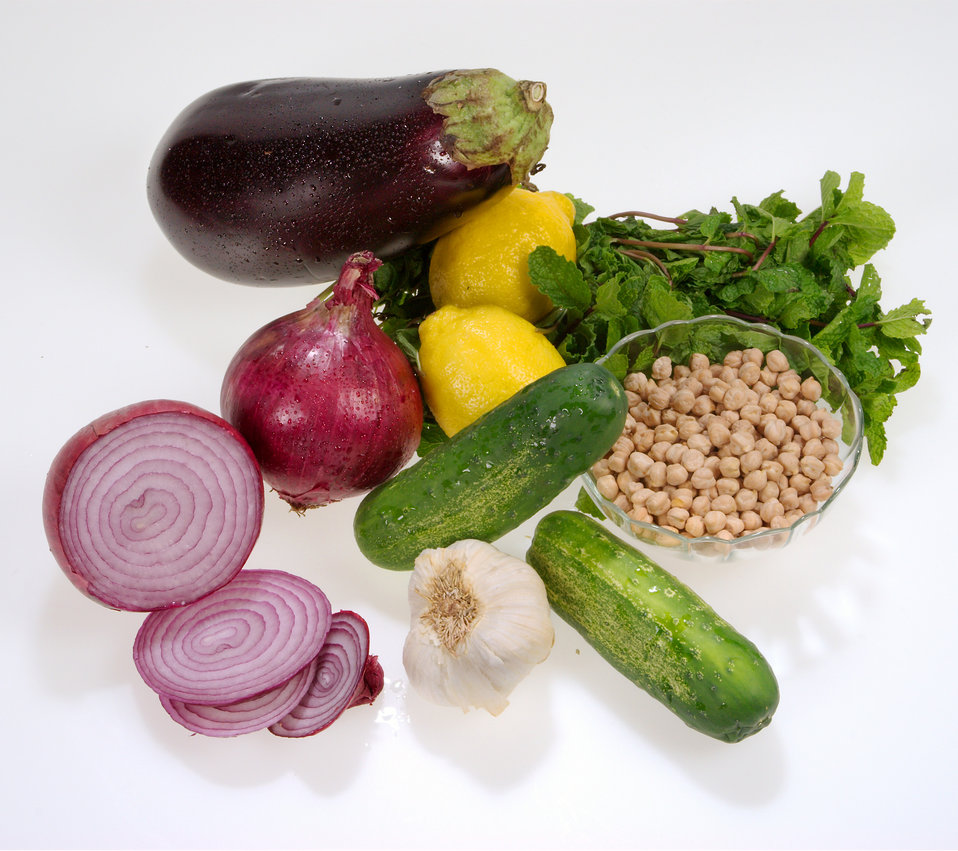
This image is actually a still life of healthy vegetables, including an eggplant, red onions, lemons, cucumbers, garlic, chickpeas, and herbs.